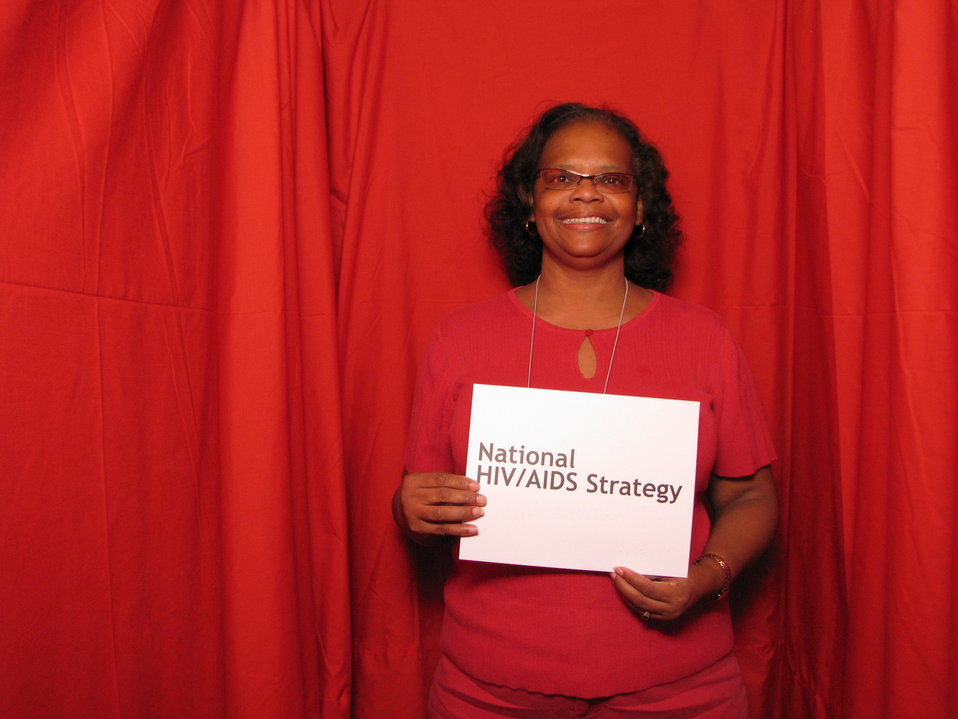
National HIV/AIDS Strategy

From the AIDS.gov photo booth at the U.S. Conference on AIDS, September 2010 (Orlando, FL).